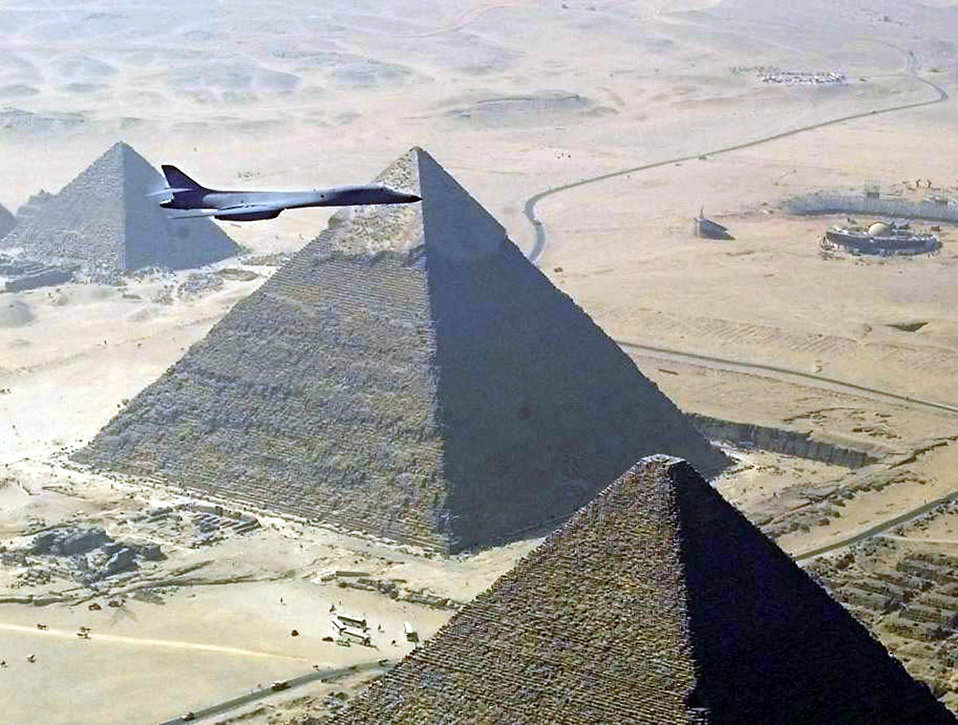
Flying over foreign lands

OVER EGYPT -- A B-1B from the 28th Bomb Wing at Ellsworth Air Force Base, S.D., flies over the pyramids in Egypt during Bright Star '99. Four B-1s from Ellsworth were among the 396 coalition aircraft that flew more than 3,000 sorties during the joint and combined coalition exercise involving 11 countries.